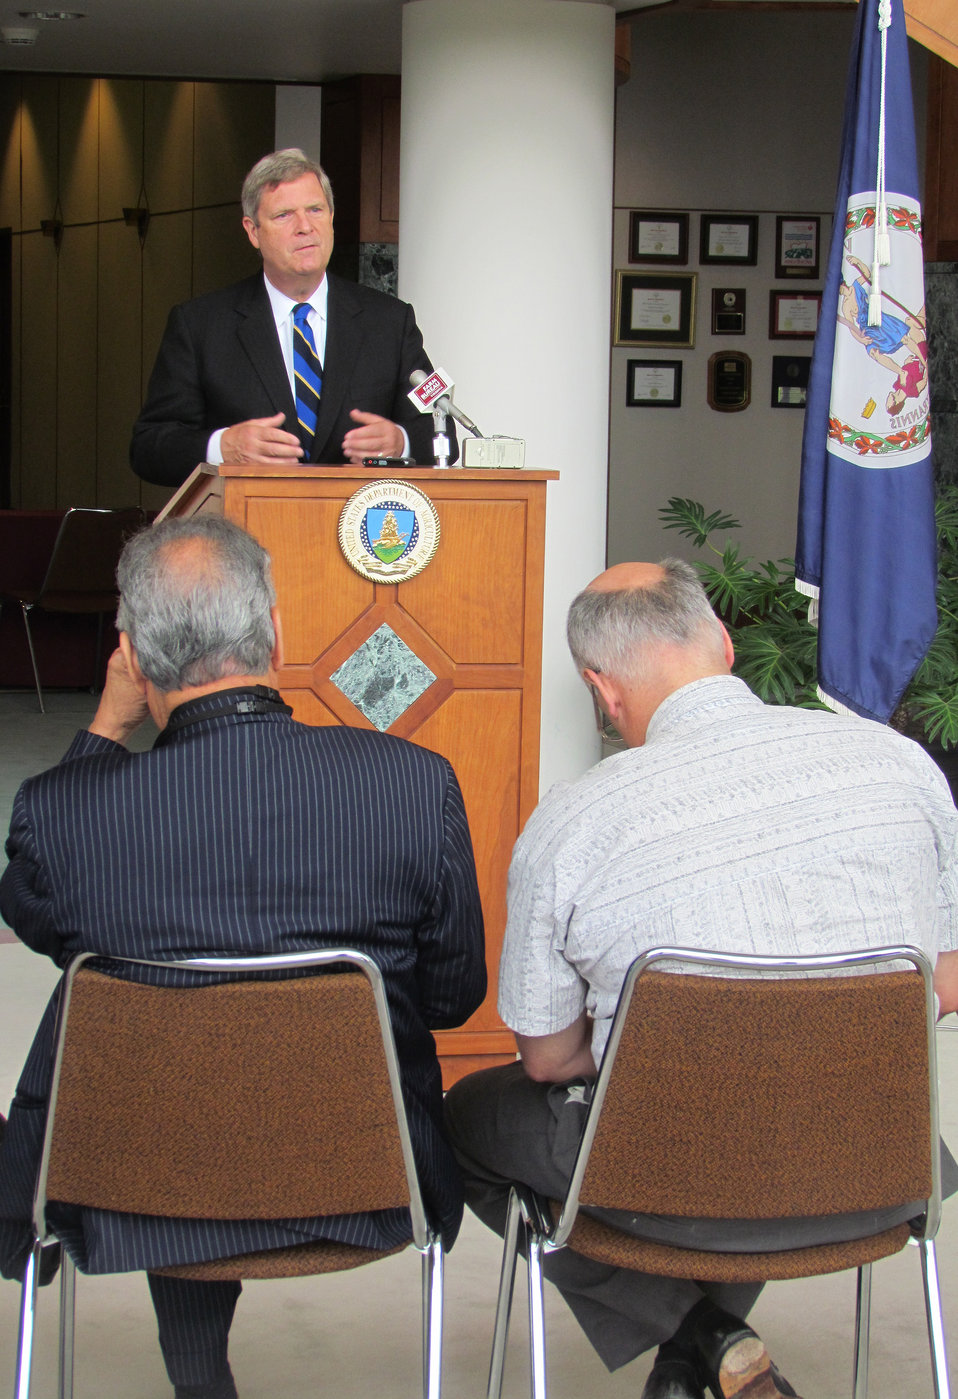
Agriculture Secretary Tom Vilsack addresses assembled media, after announcing New and Expanded Access to Credit for America's Farmers and Ranchers in Richmond, VA., on Wednesday, May 23, 2012.